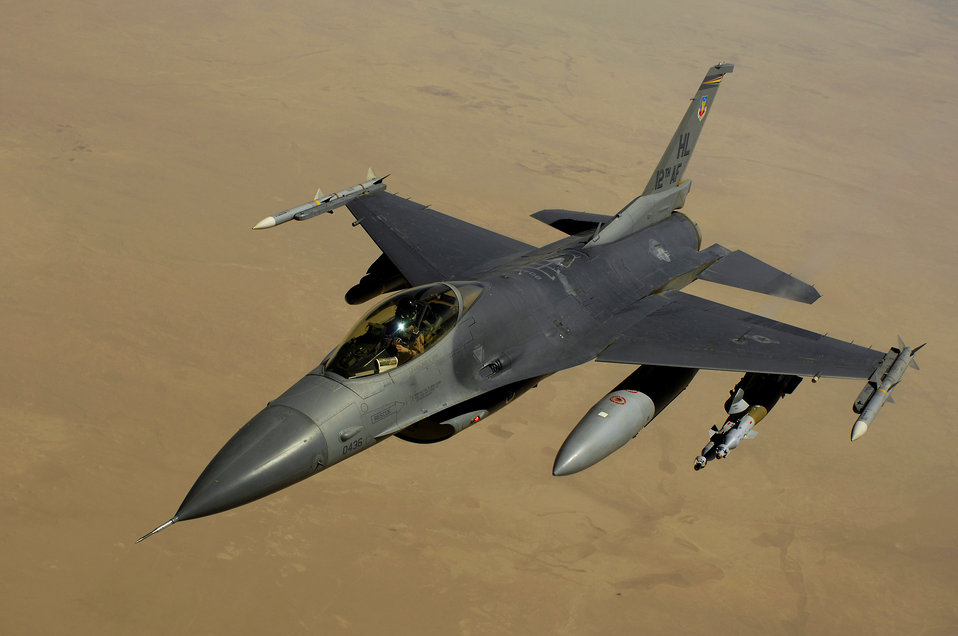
Dec. 2 airpower summary: F-16s provide top cover

An F-16 Fighting Falcon aircraft returns to the fight after receiving fuel from a KC-135 Stratotanker during a mission over Iraq. The F-16, with its high maneuverability, provides top cover for coalition forces in support of Operation Iraqi Freedom.